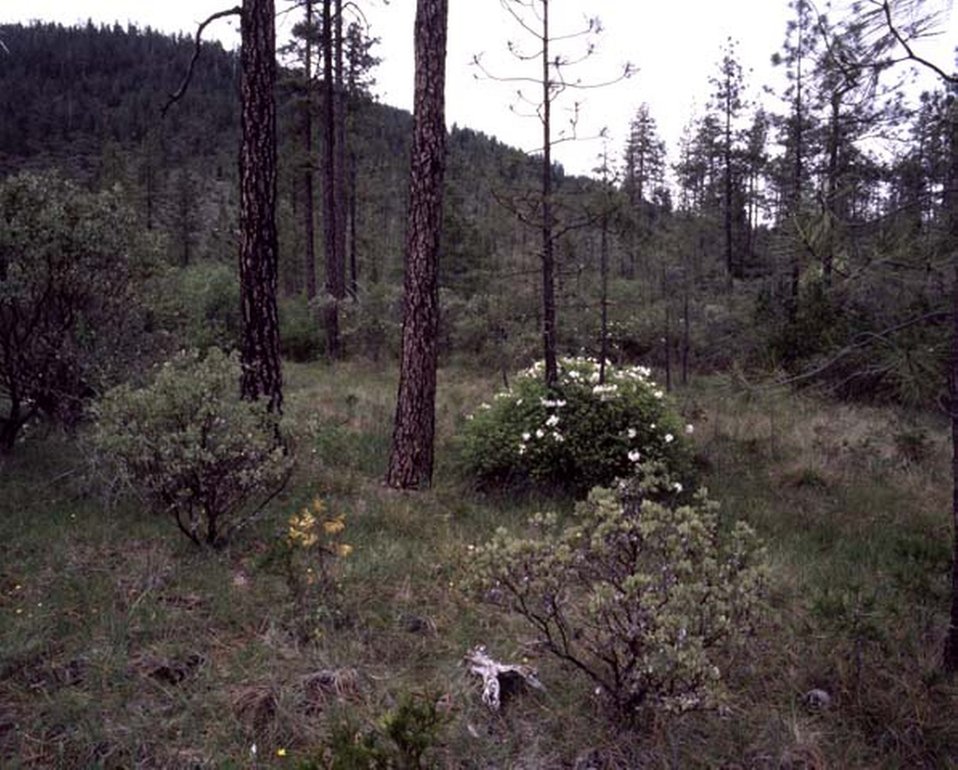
Wildflower habitat on $8 Mountain.